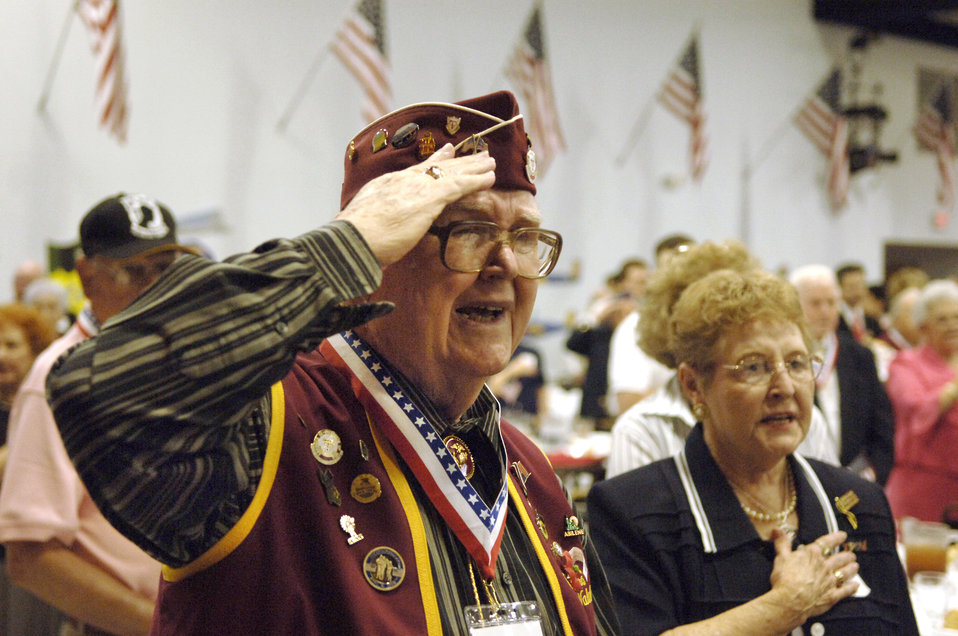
Former POW/Purple Heart Luncheon

Everett Waldrum salutes during the National Anthem at the Former POW/Purple Heart Luncheon at Barksdale Air Force Base, La., on Saturday, May 20, 2006. Eighty-two former POW and 250 Purple Heart recipients attended. Mr. Waldrum, a former Marine Corps platoon sergeant, was a POW during World War II.